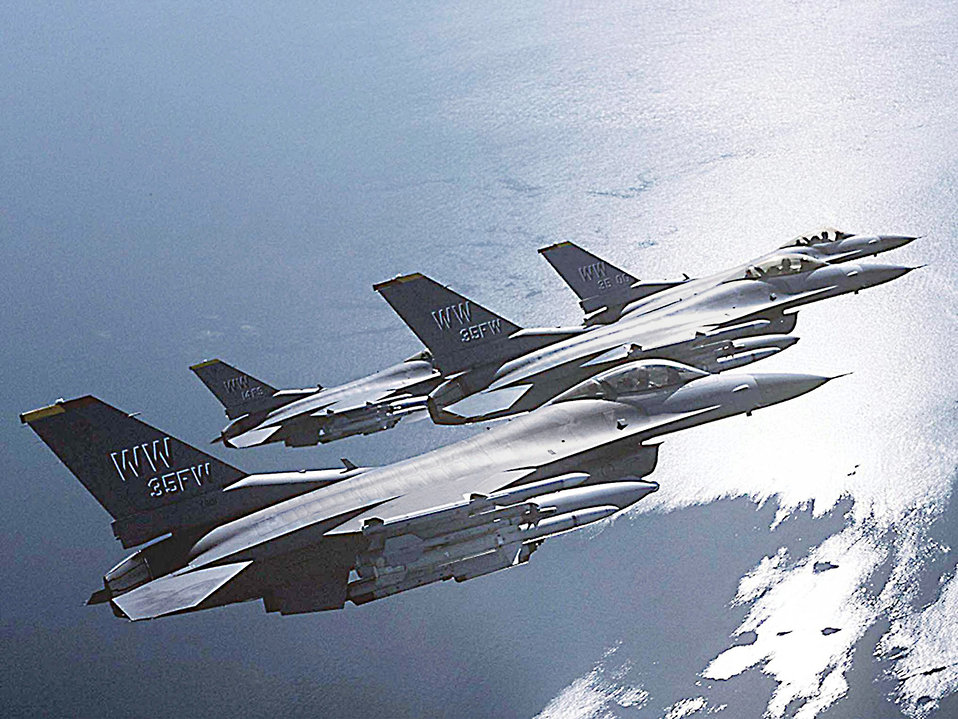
Weasel flight

OVER THE COAST OF JAPAN -- F-16